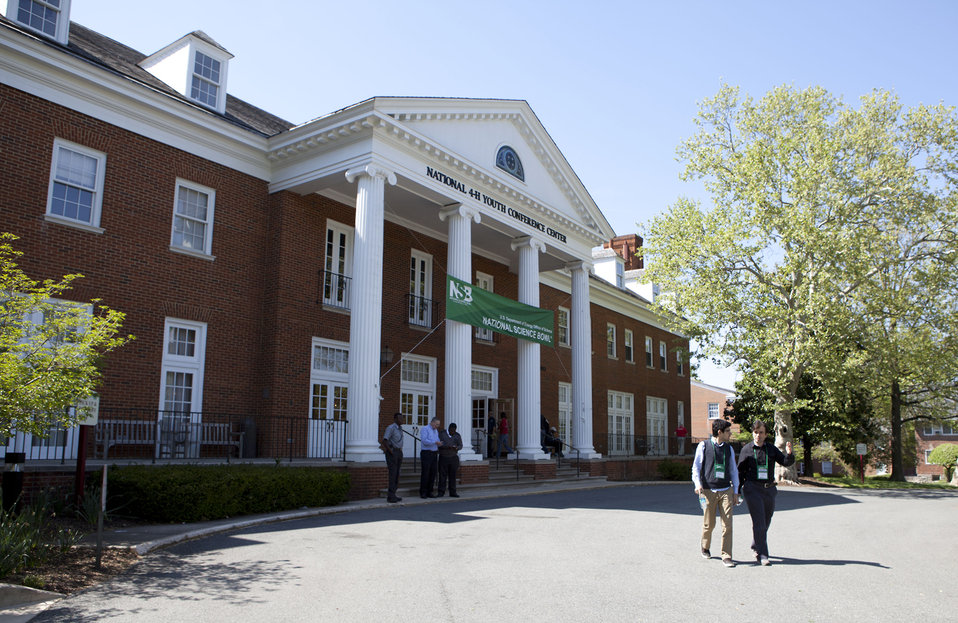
National Science Bowl 2013

The 2013 National Science Bowl started off at the 4H Center, Thursday, April 25, 2013 in Chevy Chase, Maryland.